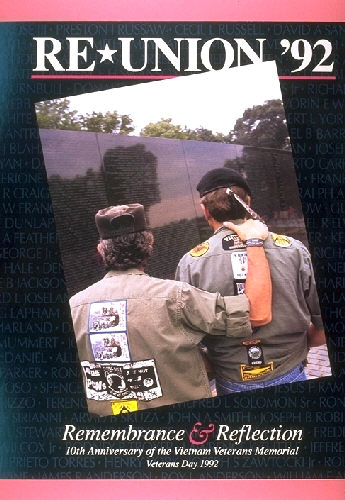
Poster commemorating Vietnam war veterans.